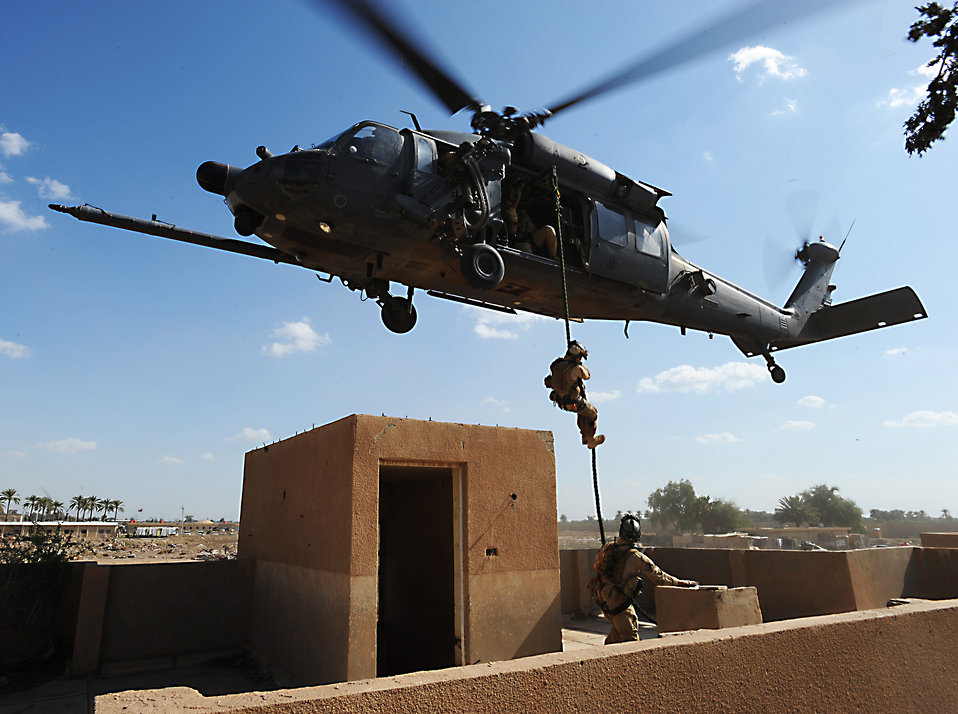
Balad squadron serves as Iraq's 'guardian angels'

A pararescueman fast ropes from an HH-60 Pave Hawk helicopter to join a team member in a proficiency exercise April 10 outside of Baghdad, Iraq. They are assigned to the 64th Expeditionary Rescue Squadron at Joint Base Balad, Iraq.